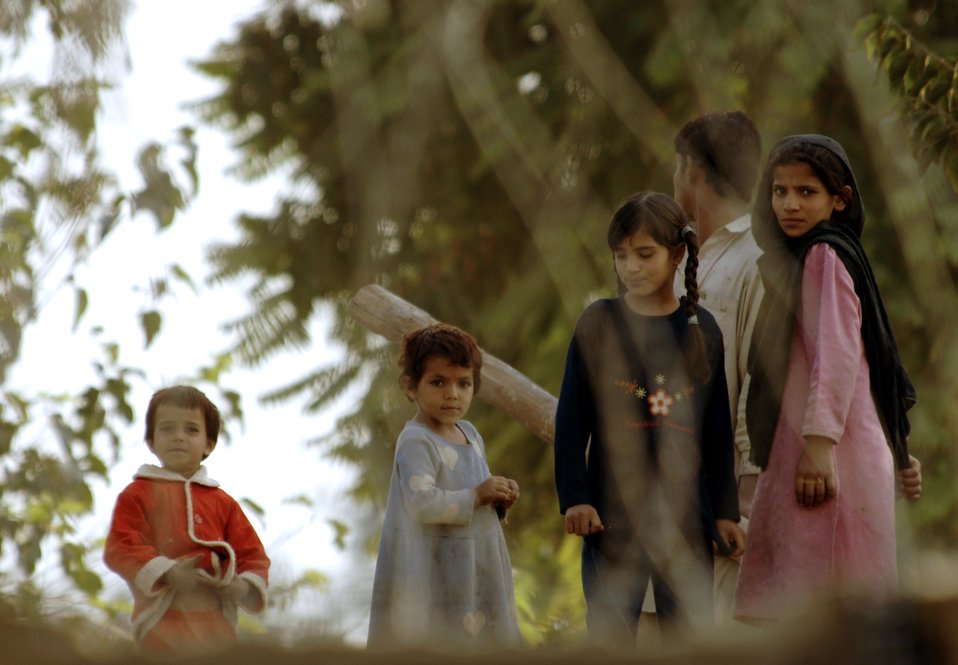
Having a ball

Children stand on a rooftop to watch a soccer game between the members of the Nangarhar Provincial Reconstruction Team and children from the local community Nov. 9 at the forward operating base in Jalalabad, Afghanistan. The Nangarhar PRT is a joint team of Airmen, Soldiers and representatives from the U.S. Department of State, U.S. Agency for International Development and the U.S. Department of Agriculture. The team is responsible for helping the Islamic Republic of Afghanistan government improve security, governance and promote reconstruction in the Nangarhar Province. PRT members assess community needs and then builds schools, government centers, roads, medical capability and basic infrastructure throughout Nangarhar. Unit members also mentor Afghan government officials and security forces to provide the Afghan people with the state representation and security they need.